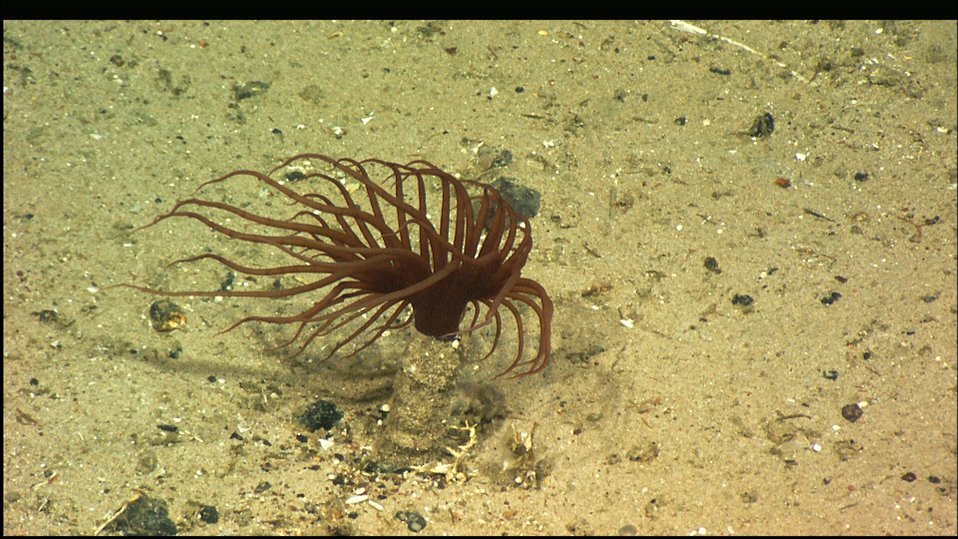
A tube anemone (Cerianthid). Cerianthid anemones construct a tube of mucous, mud, and fired nematocysts(small hair-like structures produced within specialized cells) that may extend a meter deep into the sediment.